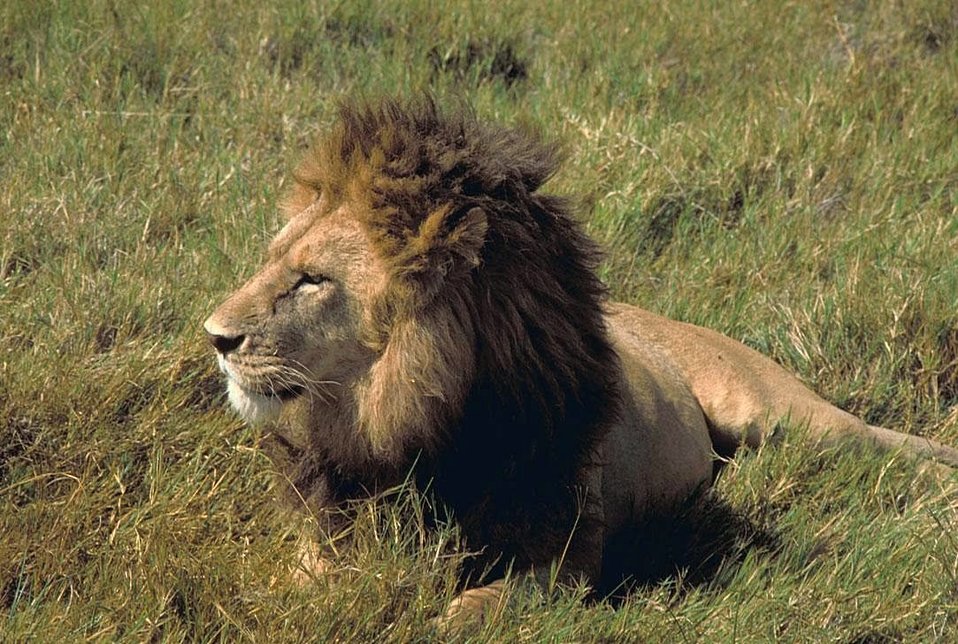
English:
Image title: Male lion African lion Image from Public domain images website, http://www.public-domain-image.com/full-image/fauna-animals-public-domain-images-pictures/lion-public-domain-images-pictures/male-lion-african-lion.jpg.html